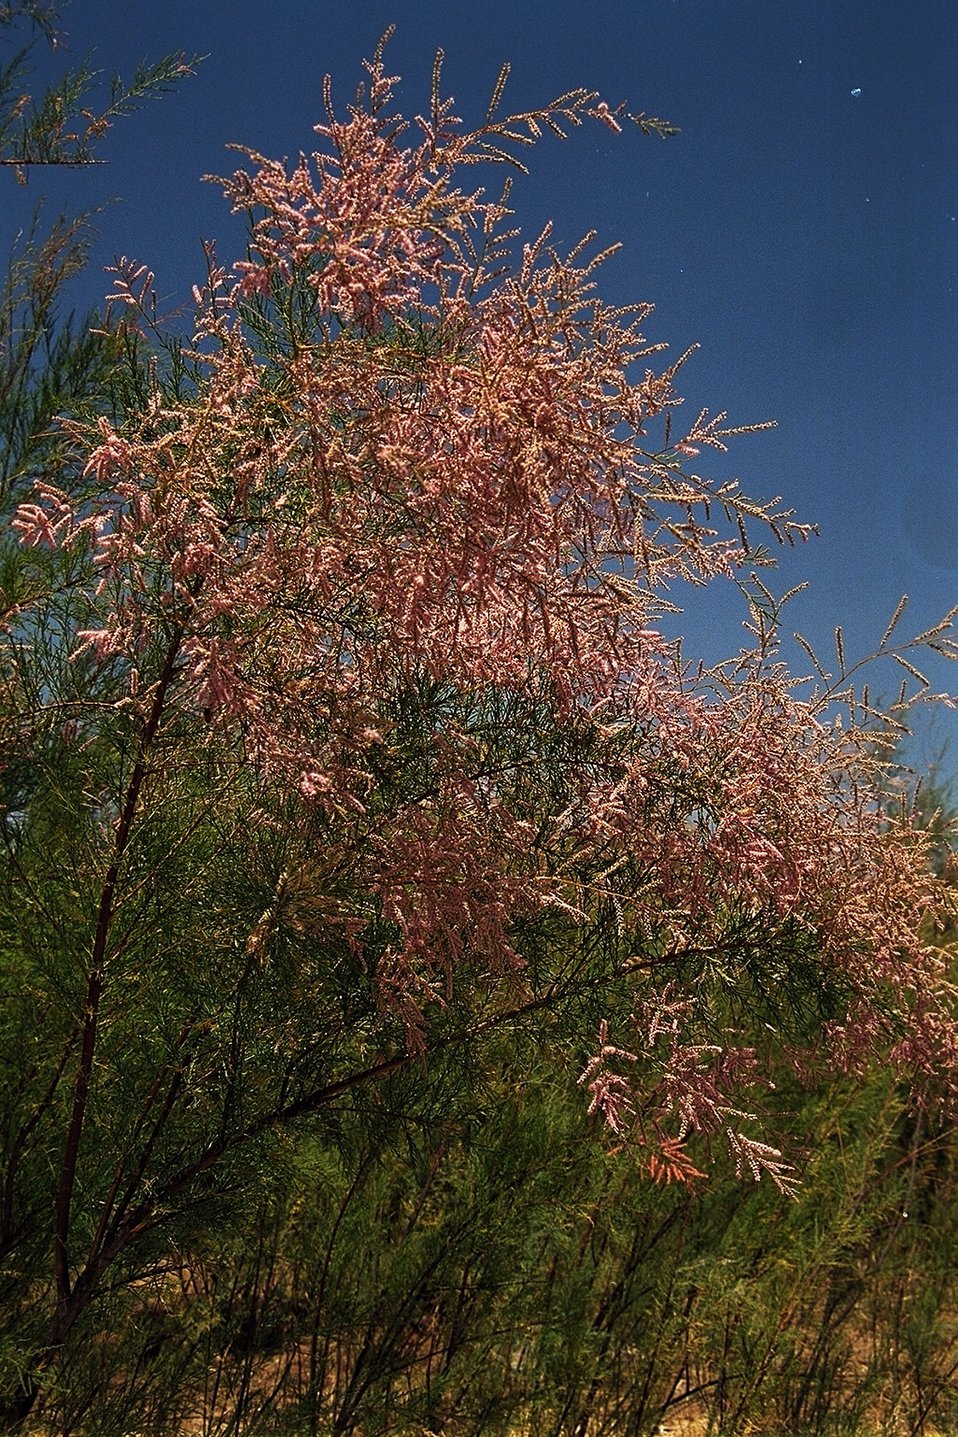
More vegetation in bloom in the Agua Fria National Monument.